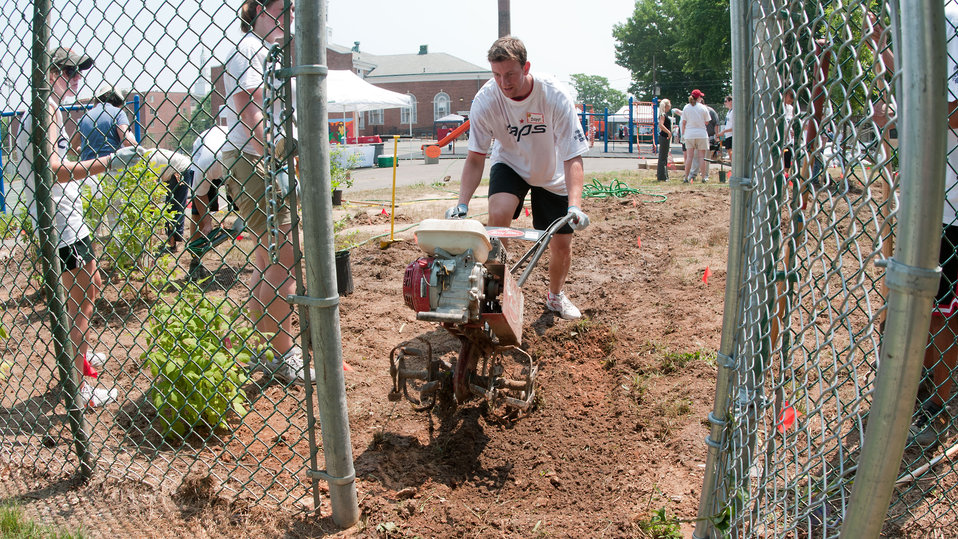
Washington Capitals defenseman Jeff Schultz had workout controlling a power tiller during the construction of a People’s Garden, at William B. Powell Elementary School, in Washington, DC, on Thursday, June 9, 2011. The professional hockey player did more than a celebrity appearance; he spent hours working with several project teams; gloves on; putting power and hand tools to their test. Volunteers from U.S. Department of Agriculture People’s Garden Executive Master Gardener program and Washington Capitals hockey organization, along with defenseman Jeff Schultz, and mascot Slapshot transformed a grassy corner of the school playground into a habitat garden and outdoor learning area. Executive Master Gardeners led the volunteer project teams. The Washington Capitals donated new tools; tool shed; garden materials; lunch; most of the volunteers and more. The completed projects included a walking path; tiling of garden plots; planting a bird habitat garden, pollinator garden and native grasses; caterpillar and butterfly plaques; hummingbird and bat house, and tool shed. The garden will later include a picnic area, outdoor classroom, hummingbird garden, Monarch watch garden, native bee garden, and birdbath. USDA challenges its employees to establish People's Gardens at USDA facilities worldwide or on this case, help communities create gardens. People's Gardens vary in size and type, but all have a common purpose - to help the community and the environment.